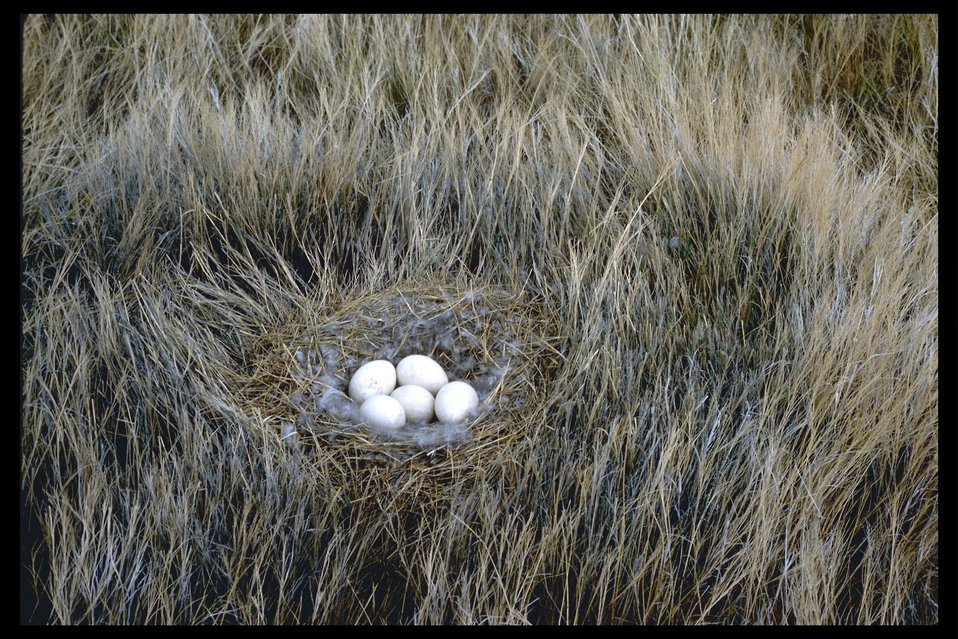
Goose nest near Borax Lake.